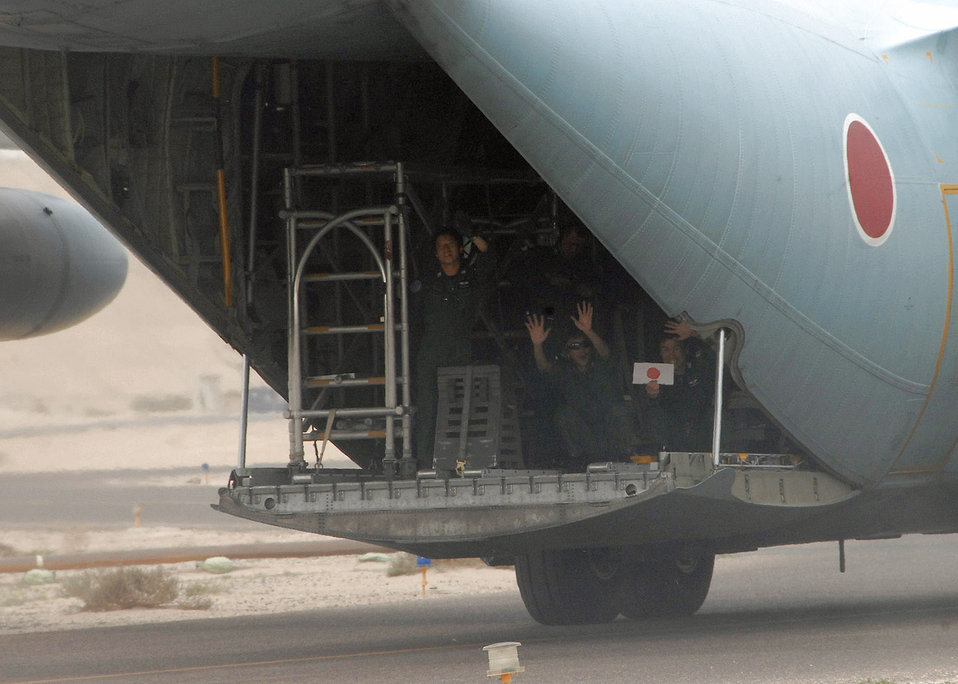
JASDF Redeplyoyment Group bids final farewell

Members of the Japanese Air Self Defense Force redeployment group wave goodbye from the back of their C-130 Hercules at an air base in Southwest Asia Feb. 10. The JASDF are returning to Japan after working alongside coalition forces since 2004.